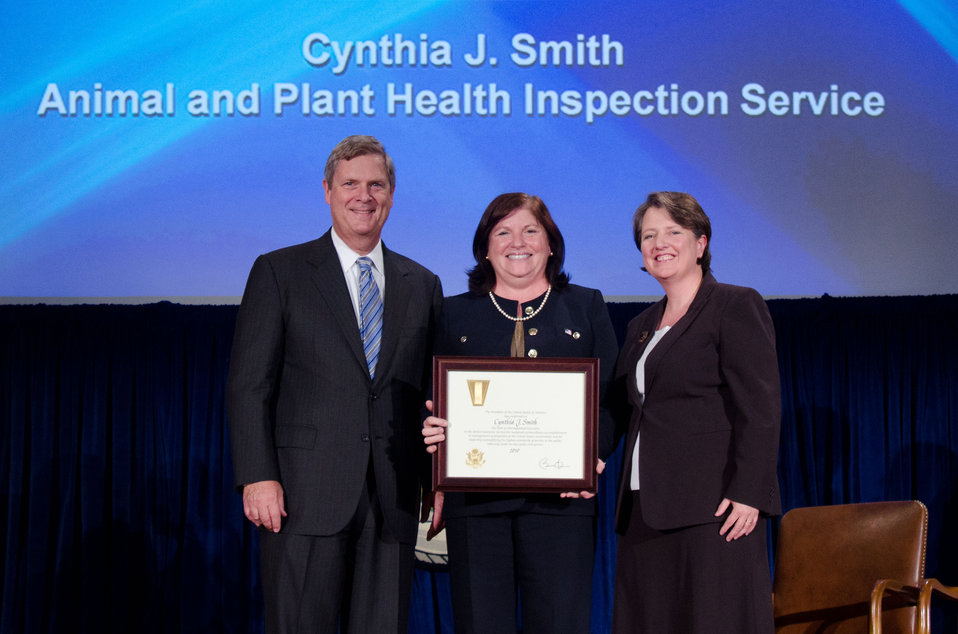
Agriculture Secretary Tom Vilsack (l) and Deputy Secretary Kathleen Merrigan (r), presents the Distinguished Executive Award to Cynthia J. Smith, Advisor, Government Academia and Industry Partnership, Animal and Plant Health Inspection Service. The President of the United States of America has conferred on Cynthia J. Smith the rank of Distinguished Executive in the Senior Executive Service for sustained extraordinary accomplishment in management of programs of the United States Government and for leadership exemplifying the highest standards of service to the public reflecting credit o the career civil service. On Wednesday, September 14, 2011 in the Jefferson Auditorium at the US Department of Agriculture in Washington, DC.